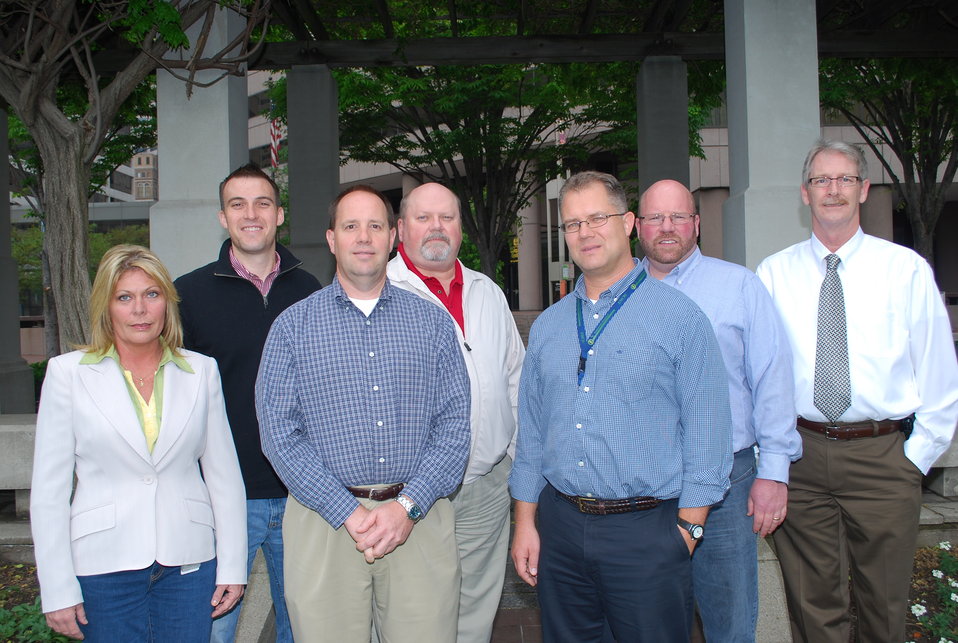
EM Cost Estimating Team Met Recovery Act Challenges

The EM Consolidated Business Center Office of Cost Estimating and Analysis team includes, left to right, Lori Rice, Michael Mills, Russ Donaldson, Allen Moe, Steve Okszewski, Kevin Barry, and Office Director Terry Brennan.

The Environmental Management Consolidated Business Center (EMCBC) has filled a need to establish a program cost estimating function to support the EM mission.

Locating the Office of Cost Estimating and Analysis (OCE&A) at the Cincinnati-based EMCBC, the organization that provides technical and business services to EM, allowed the office to support the large amount of contracting activity managed by EMCBC.
OCE&A’s formation in 2008 came at a good time: just before the Recovery Act invested $6 billion into EM’s Cold War cleanup in 2009. The office was able to provide accurate, independent government cost estimates (IGCE) used to evaluate contractor proposals for the Recovery Act cleanup.

“The team literally hit the ground running. We barely formed the team in 2008 and began training them in the requirements of government cost estimating and the EM mission when we learned that the Recovery Act was going to put $6 billion in work across the complex,” OCE&A Assistant Director Terry Brennan said.